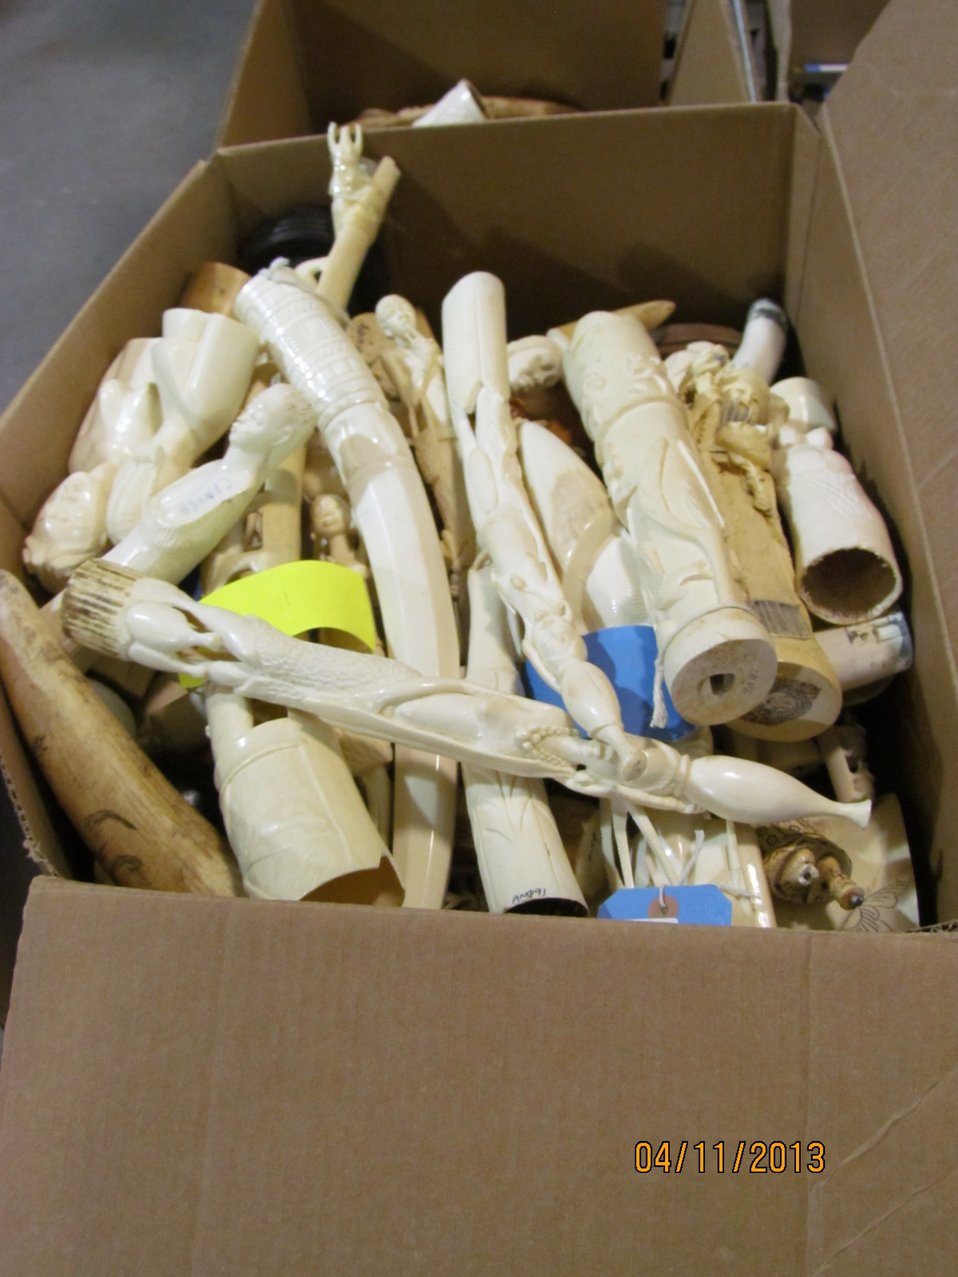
Box of small ivory pieces and tusks